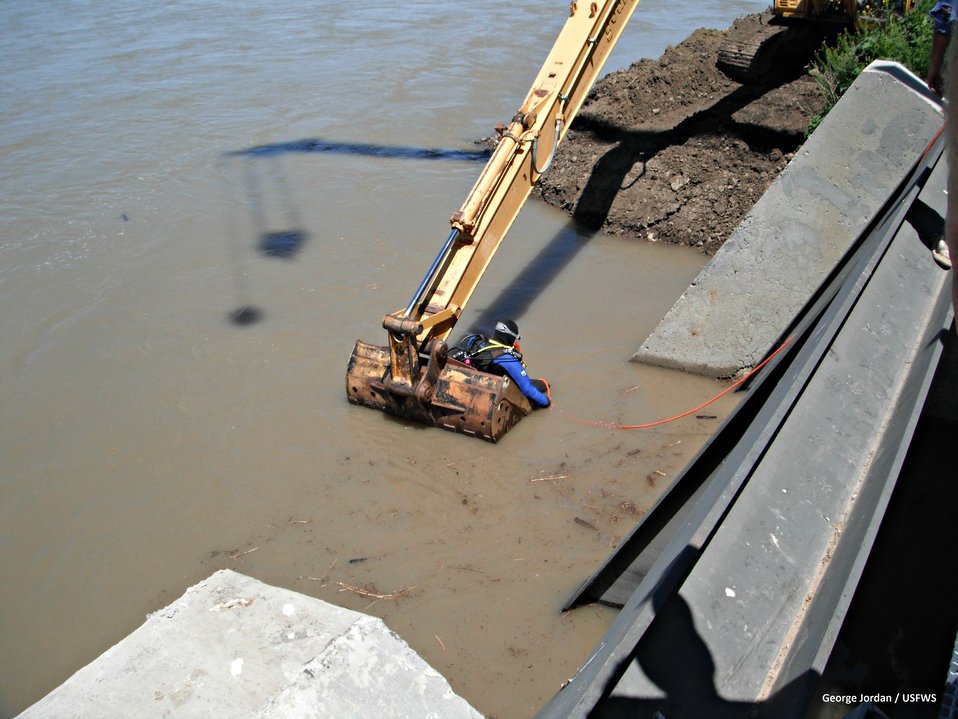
Proof Reading

Because the water is murky during spring run-off, there is no way to assess the cleanliness of the sediment removal efforts, from above at least. What to do? Why, call in a diver to look...by feel that is.